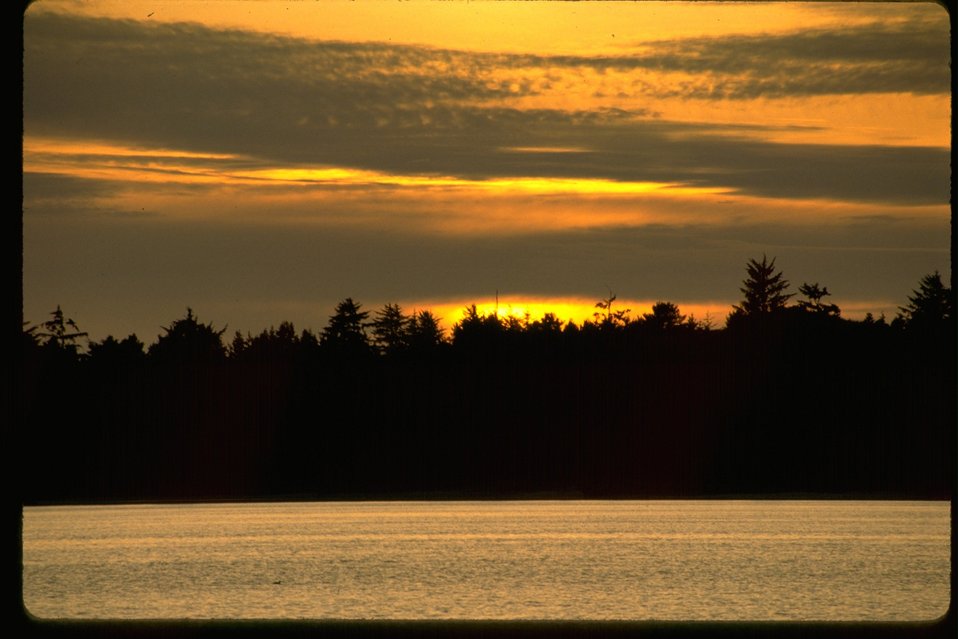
North Spit at nightfall with sunset.